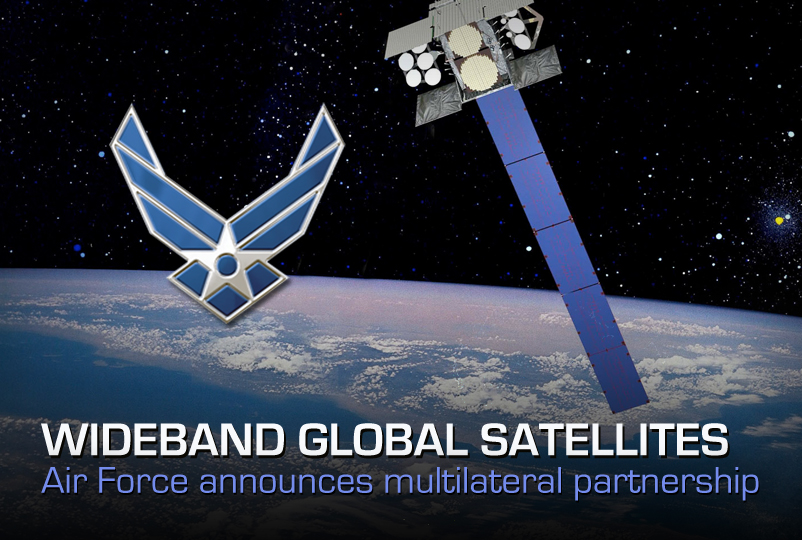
Wideband Global Satellites